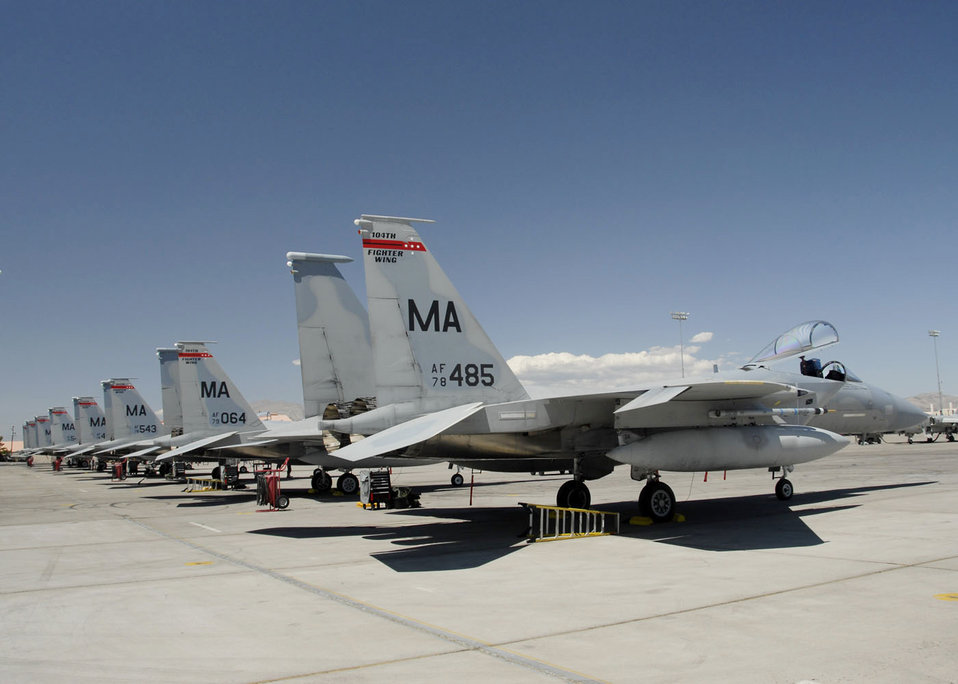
104th Fighter Wing comes to Red Flag

F-15 Eagles from the Massachusetts Air National Guard's 104th Fighter Wing at Barnes Air National Guard Base in Westfield, Mass., lined up on the Nellis Air Force Base, Nev., Aug. 25 while participating in a Red Flag exercise. Red Flag offers pilots and ground crews training in actual wartime scenarios to increase their combat skills.